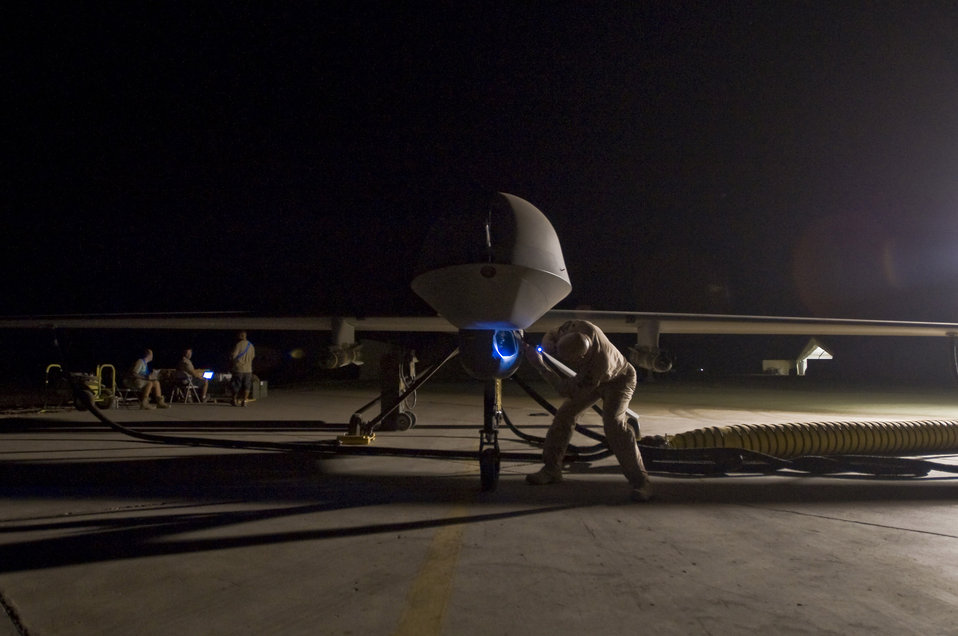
Predator preparations

Lt. Col. Geoffrey Barnes performs a preflight inspection of an MQ-1 Predator unmanned aircraft system Sept. 3 at Ali Base, Iraq. The Predator is a medium-altitude, long-endurance, remotely piloted aircraft system. Colonel Barnes is commander of the 46th Expeditionary Reconnaissance and Attack Squadron Det. 1, and is deployed from Creech Air Force Base, Nev.